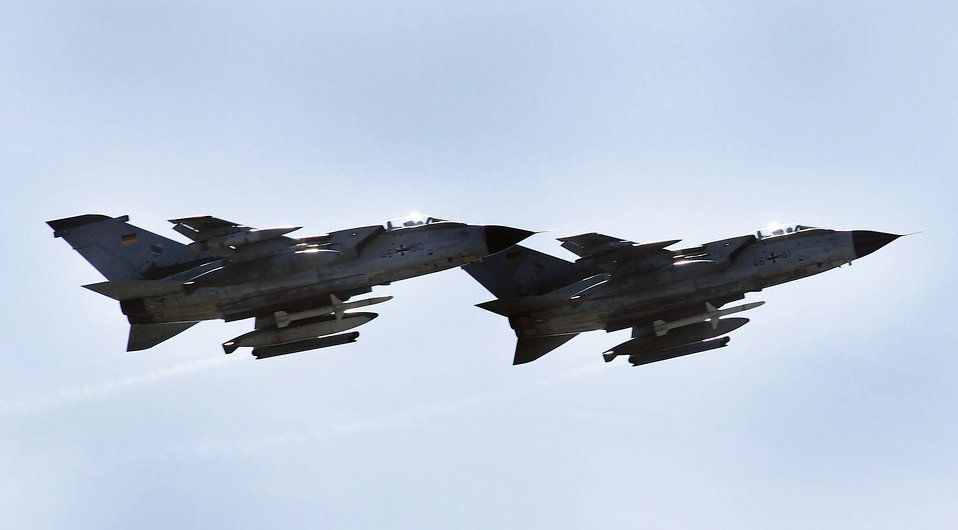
Joint training at Red Flag Alaska 08-3

Two German Tornados fly over the flight line June 9 during Red Flag-Alaska 08-3 at Eielson Air Force Base, Alaska. Red Flag-Alaska is a series of Pacific Air Forces commander-directed field training exercises for U.S. forces, providing joint offensive counter-air, interdiction, close-air-support, and large force-employment training in a simulated combat environment.